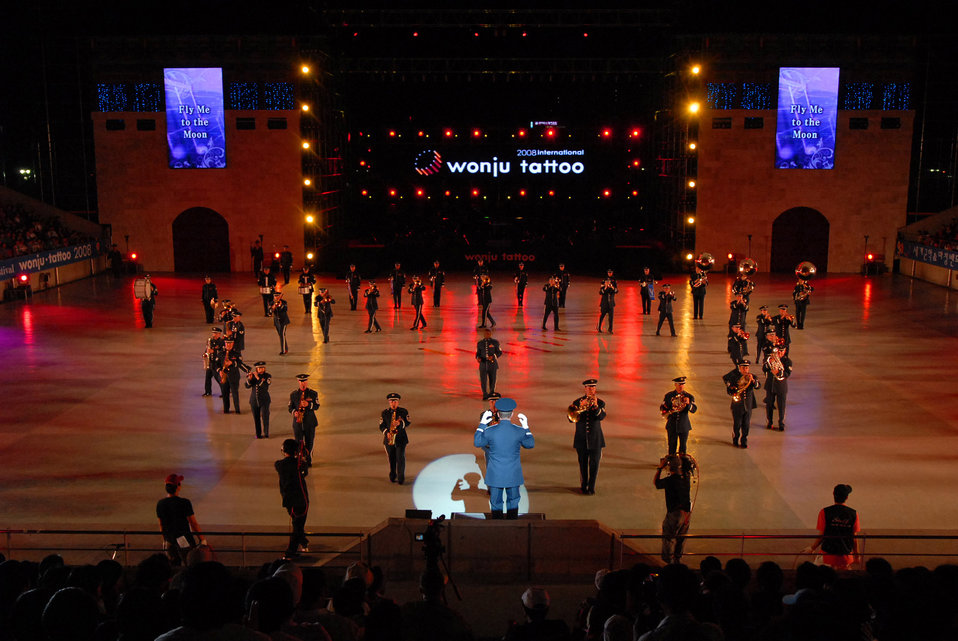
International tattoo drums up excitement

Members of the Air Force Total Force Band perform at the 2008 International Tattoo Sept. 5 in Wonju, South Korea. The band was formed with regional band members from commands worldwide.